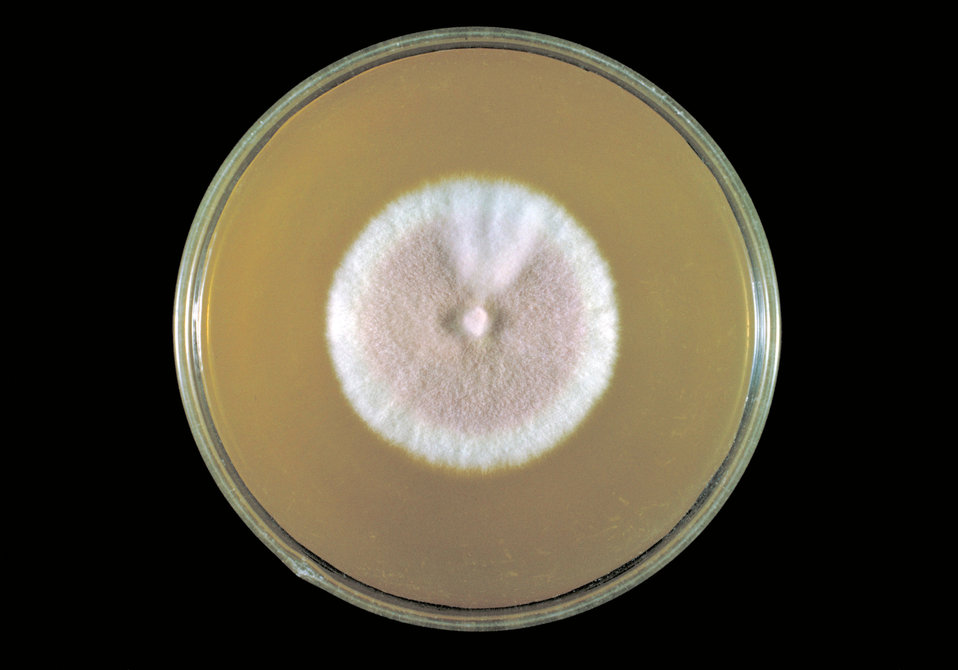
This Sabouraud's dextrose agar plate culture is growing T. terrestre fungus, rose-pigmented strain X-231.